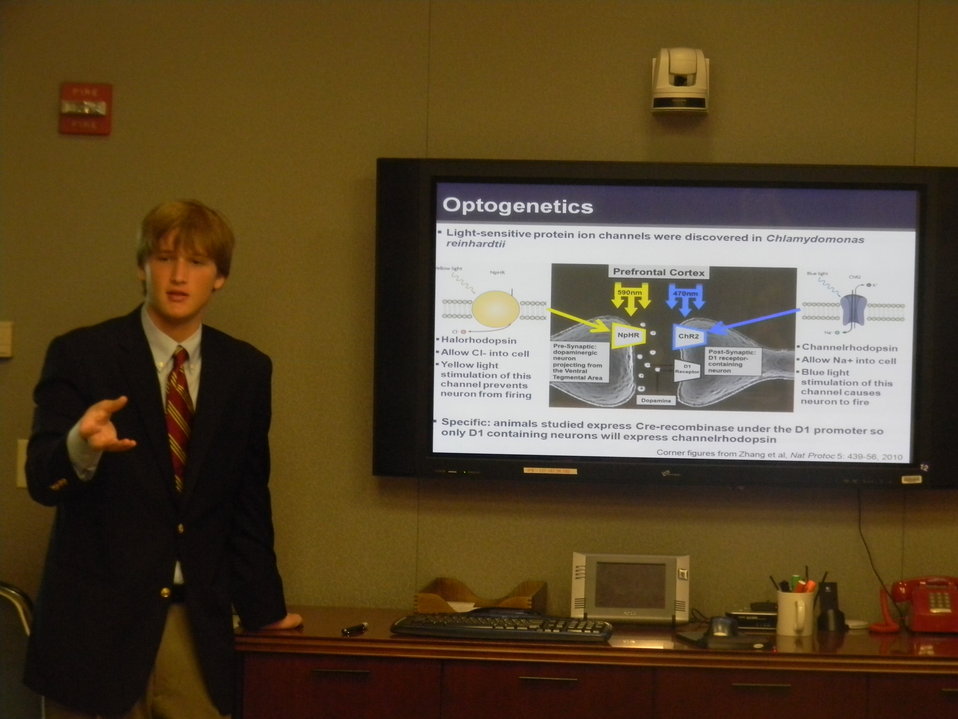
1st place 2012 ISEF award winner John Edward Solder